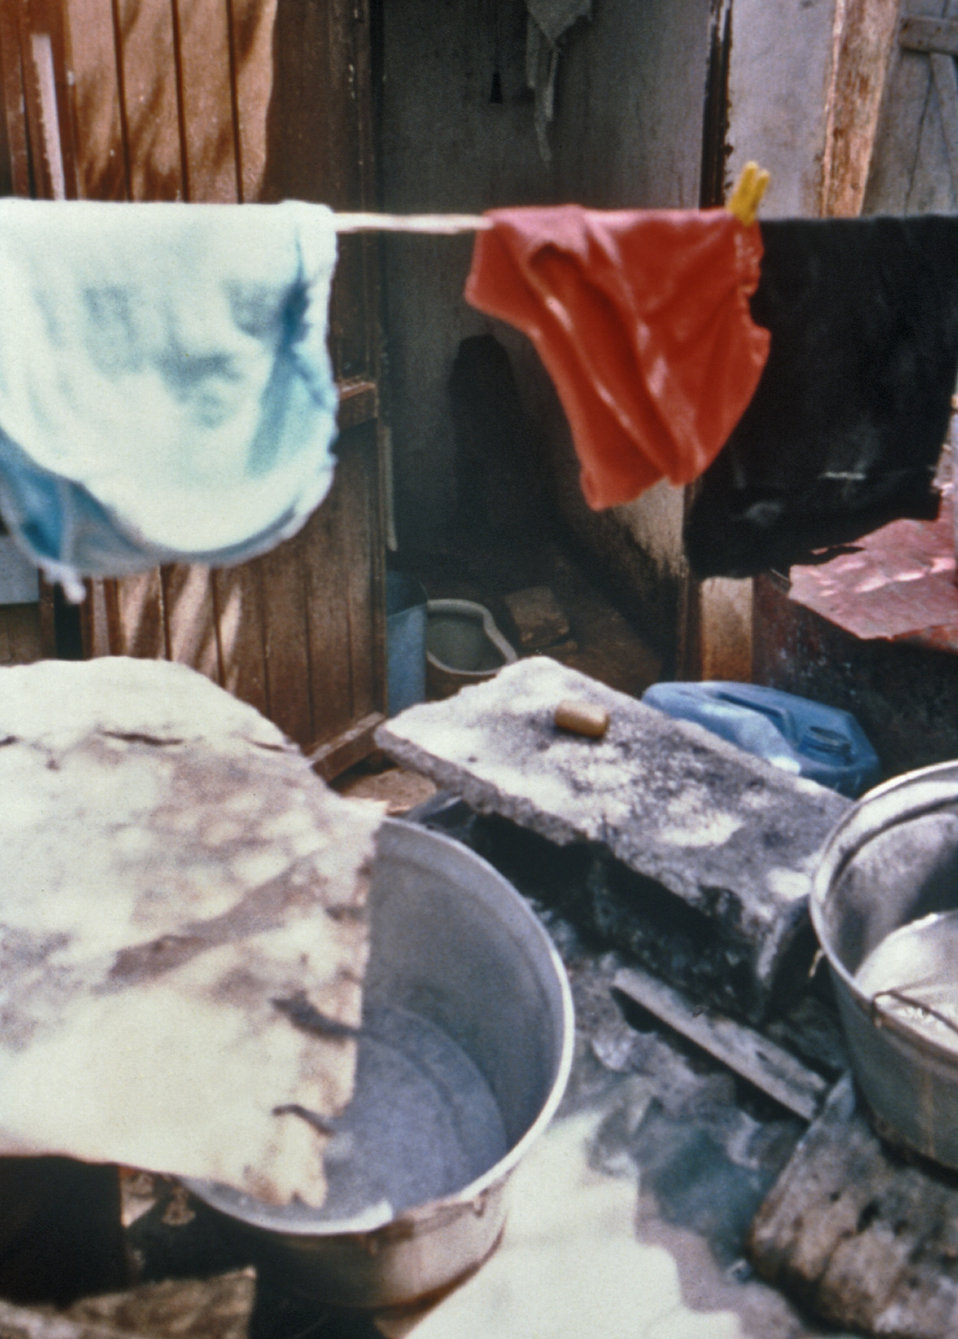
The background of this photograph shows a water closet, or bathing area, found in the residence of the index case of the 1980 Cite' Roche Bois, Mauritius typhoid outbreak.